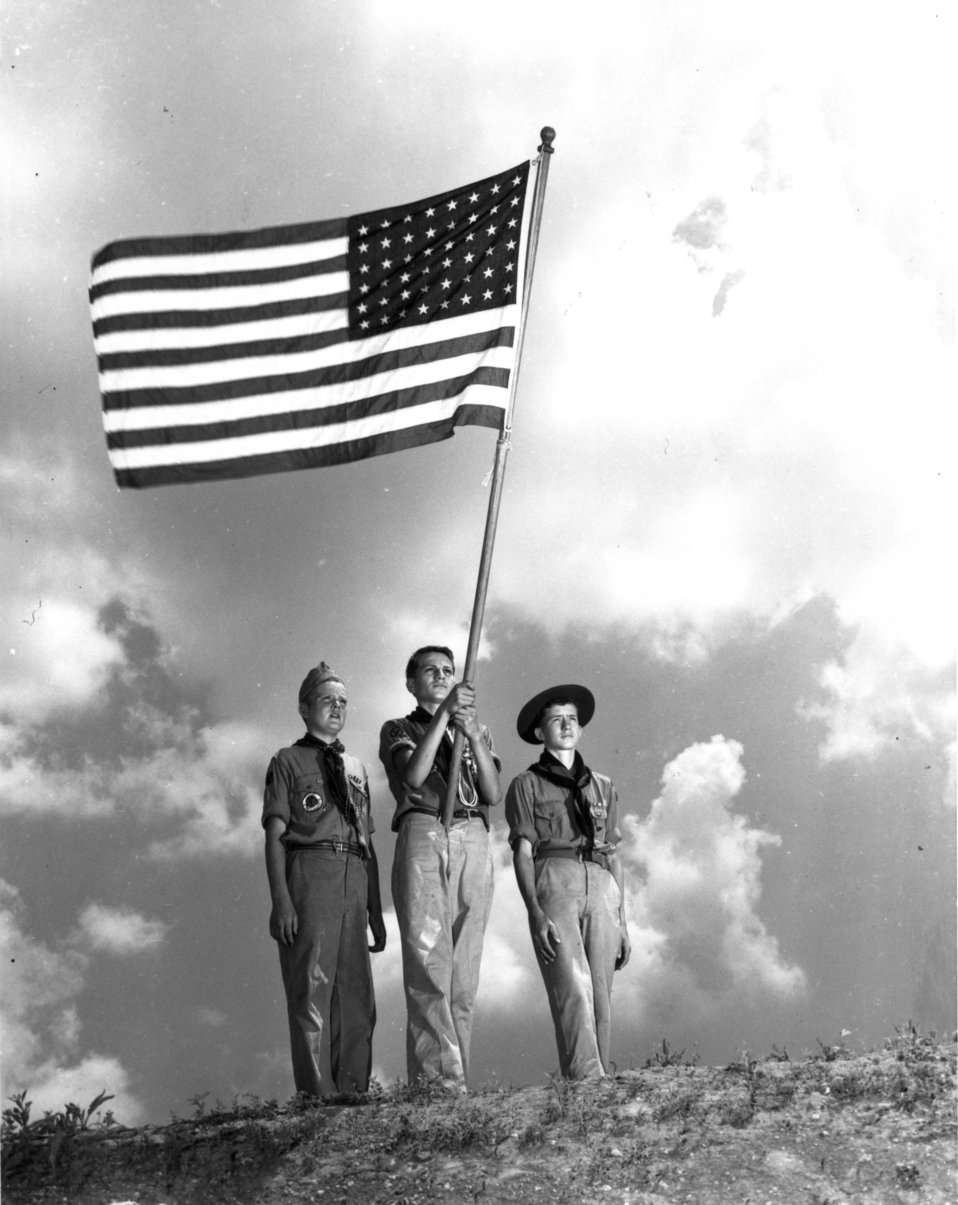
Recreation at Oak Ridge